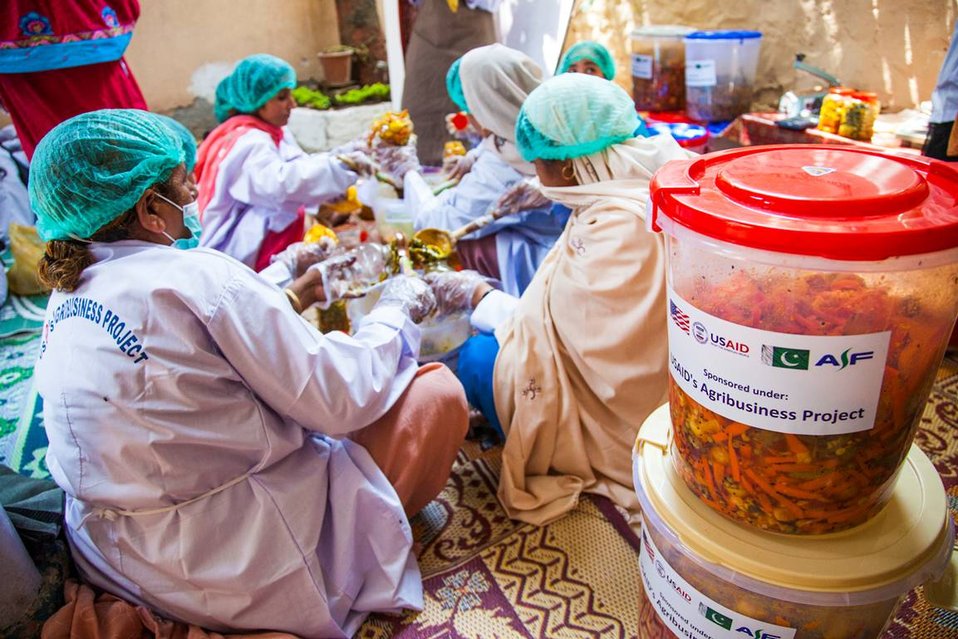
USAID's Agribusiness Project Women FEG for Food Processing - Pickle Production at Village Jabbi

The women, from three nearby villages, formed a Farmer Enterprise Group to start making and distributing pickles to local markets. Many of the women had previously made and sold pickles from their homes, earning 400-500 rupees a month. With their new training and tools, each woman entrepreneur is expected to earn about 2,500 rupees a month from this business.
www.usaid.gov/pk/db/sectors/growth/project 750.html